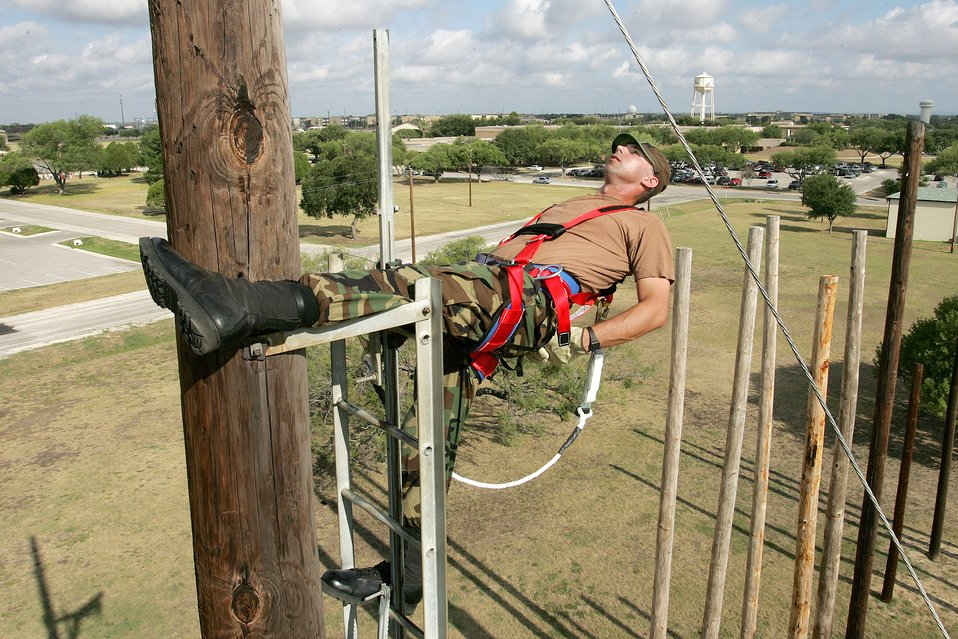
Acrophobia

Airman Basic William Killebrew performs sit-ups atop a 45-foot ladder attached to a utility pole at Lackland Air Force Base, Texas, on Thursday, July 13. Airman Killebrew is being evaluated for acrophobia, a fear of heights. Six Air Force career fields require this test before continuing to technical school. Airman Killebrew, in his second week of basic training, has been selected for the communications career field. He is assigned to the 322nd Training Squadron.